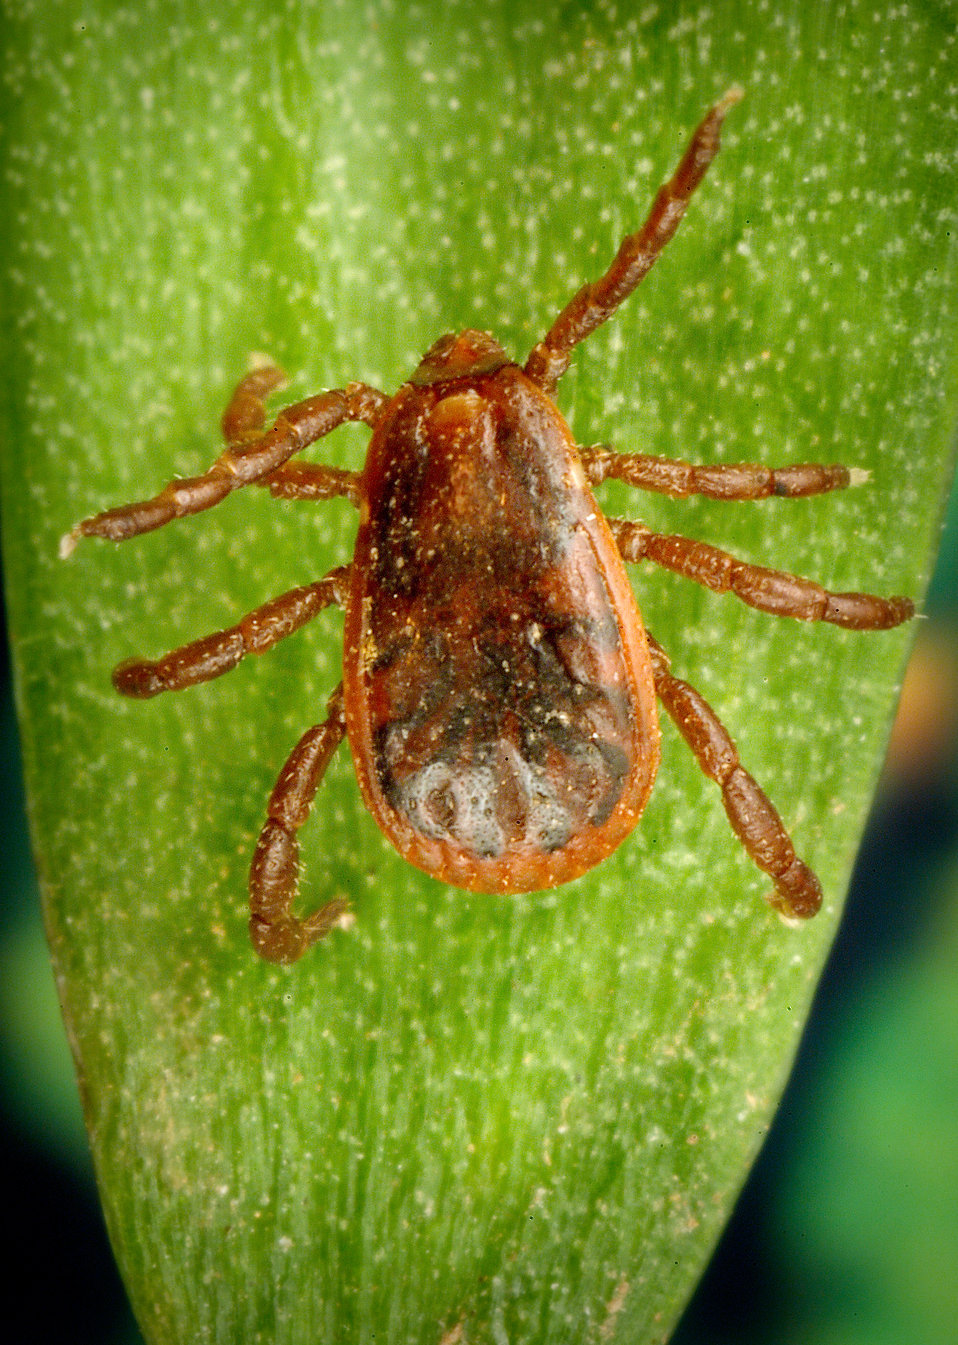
This 2005 image depicted a male 'brown dog tick', Rhipicephalus sanguineus from a superior, or dorsal view looking down on this 'hard tick's' scutum, or keratinized 'shield' which entirely covers its back, identifying it as a male. In the female, the dorsal abdomen is only partially covered, thereby, offering room for abdominal expansion when she becomes engorged with blood while ingesting her blood meal obtained from her host.Though not the primary vector for Rocky Mountain spotted fever (RMSF) like the 'American dog tick', Dermacentor variabilis, and the 'Rocky Mountain wood tick' D. andersoni, R. sanguineus has been found to be a less-common vector as well. This tick is distributed throughout the world. It also is known to transmit diseases to animals including canine babesiosis, bovine anaplasmosis, East Coast fever and Texas cattle fever. It can also spread tularemia, and tick-borne typhus to human beings.